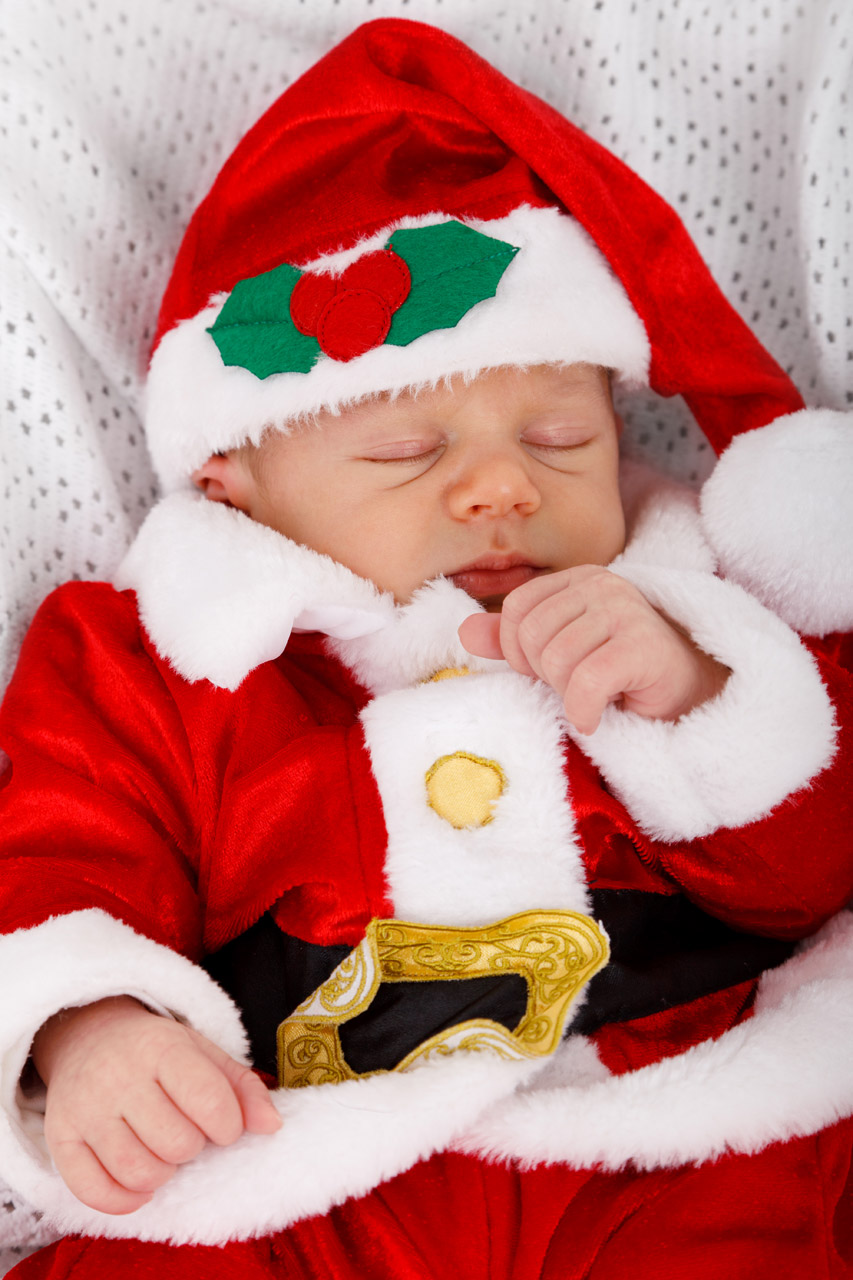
Baby santa sleeping

Adorable baby santa sleeping.